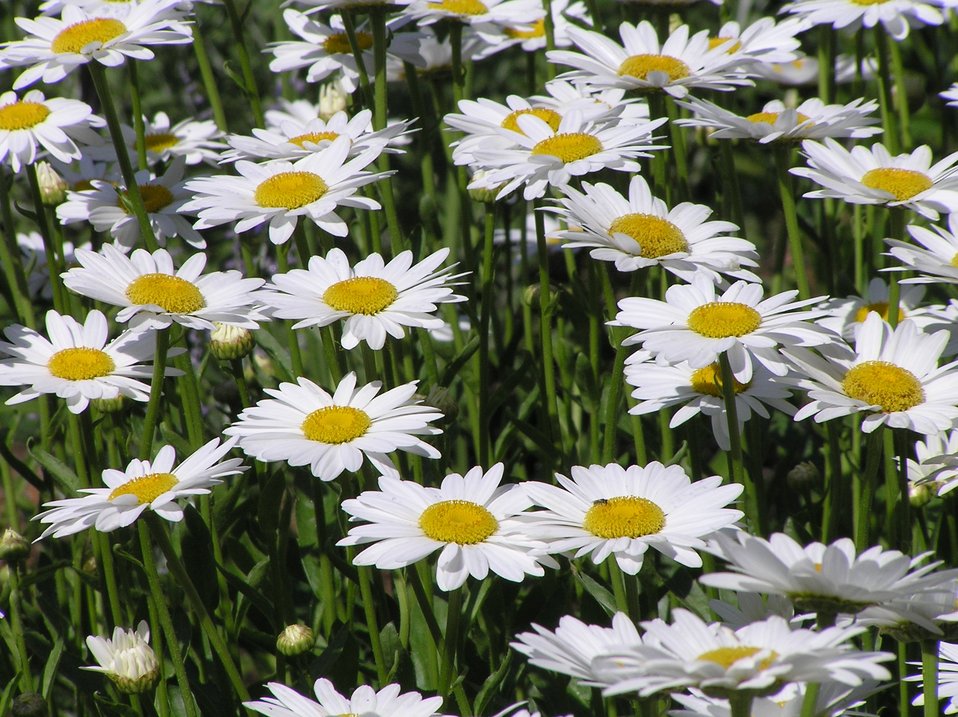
Photo by J. Corey Butler, 2006.